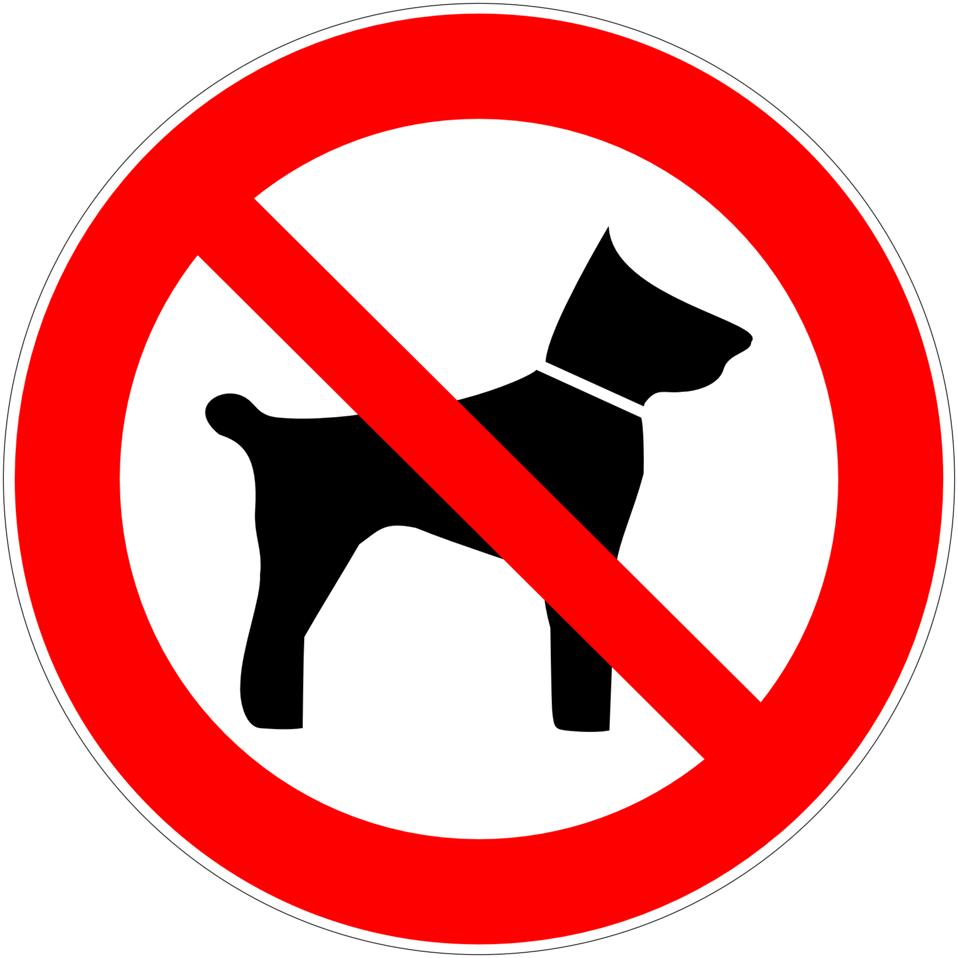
Deutsch: Mitführen von Tieren verboten, Verbotszeichen D-P014 nach DIN 4844-2 No animals, prohibition sign D-P014 according to German standard DIN 4844-2